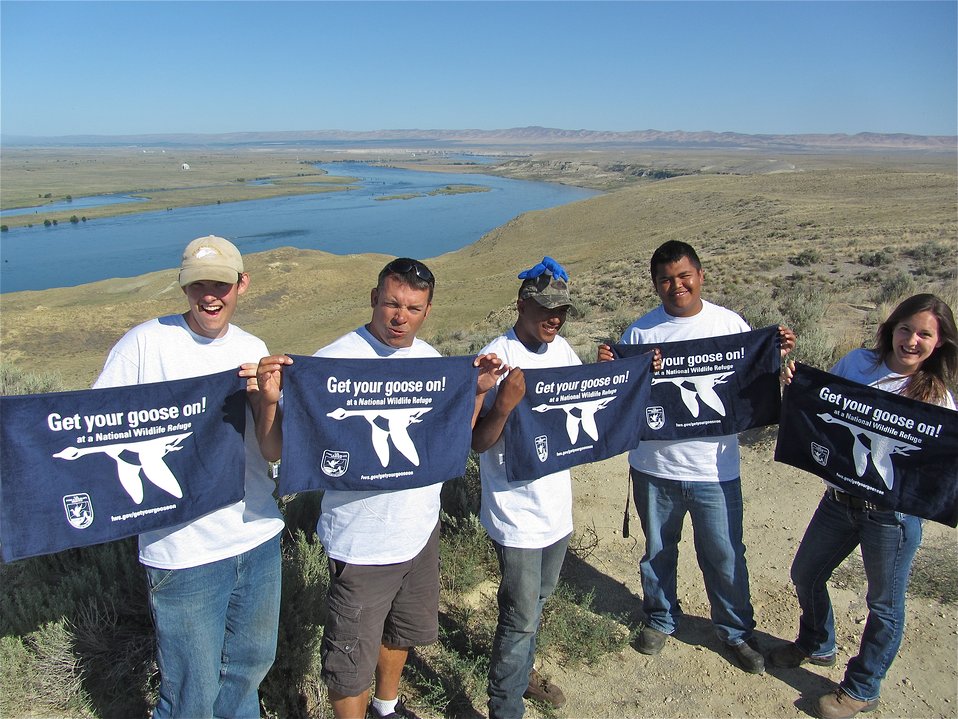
Get Your Goose On! - Columbia River Style

Youth Conservation Corps crew and leader (Wayne) from the McNary NWR at the White Bluffs Overlook on the Columbia River in Hanford Reach National Monument - the U.S. Fish and Wildlife Service's first National Monument!